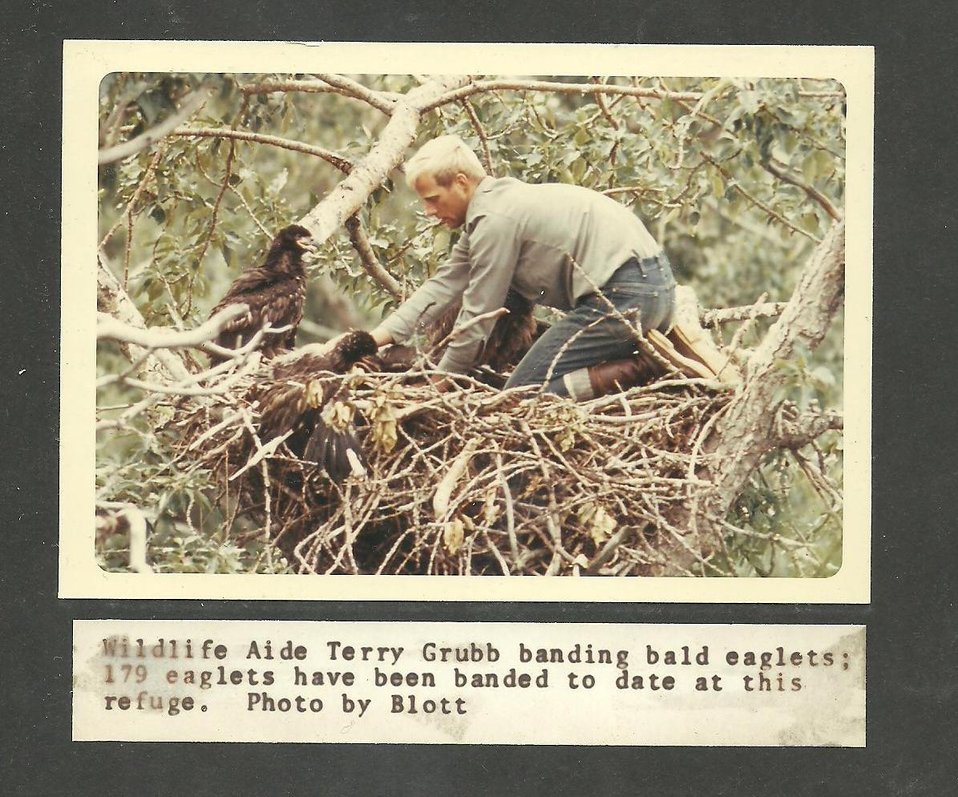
(1968) Banding Bald Eaglets

Credit: USFWS

Source and Contact: Kodiak National Wildlife Refuge